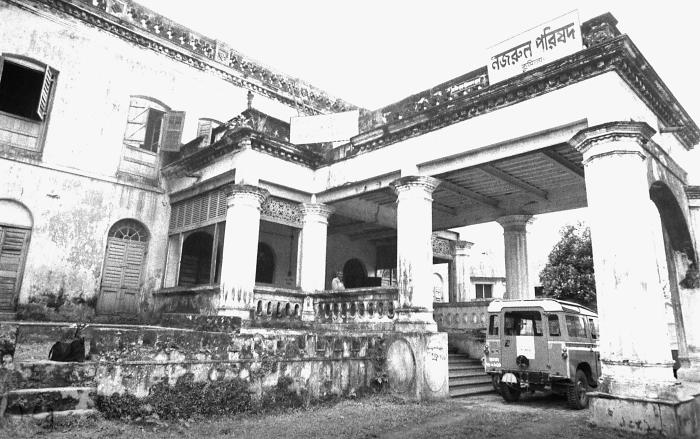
This 1975 image depicted the front of one of the Bangladesh field headquarters where eradication team members would exchange data collected during their assigned rounds throughout the country's communities. A smallpox team jeep was parked outside the edifice at the time that this photograph was captured.